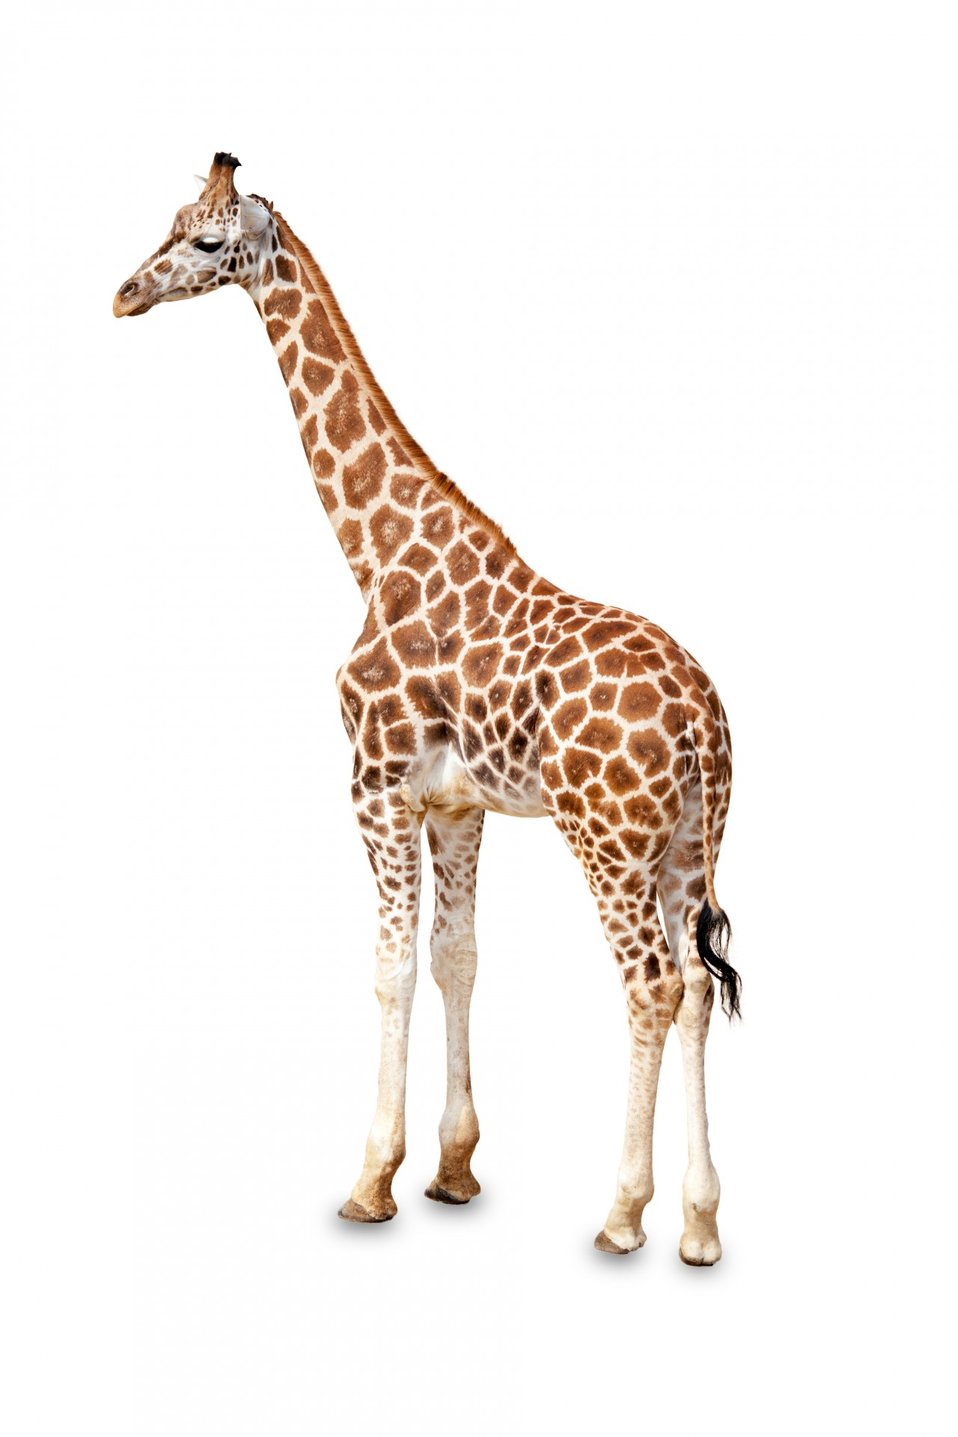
Giraffe standing isolated

A giraffe standing isolated on white background.